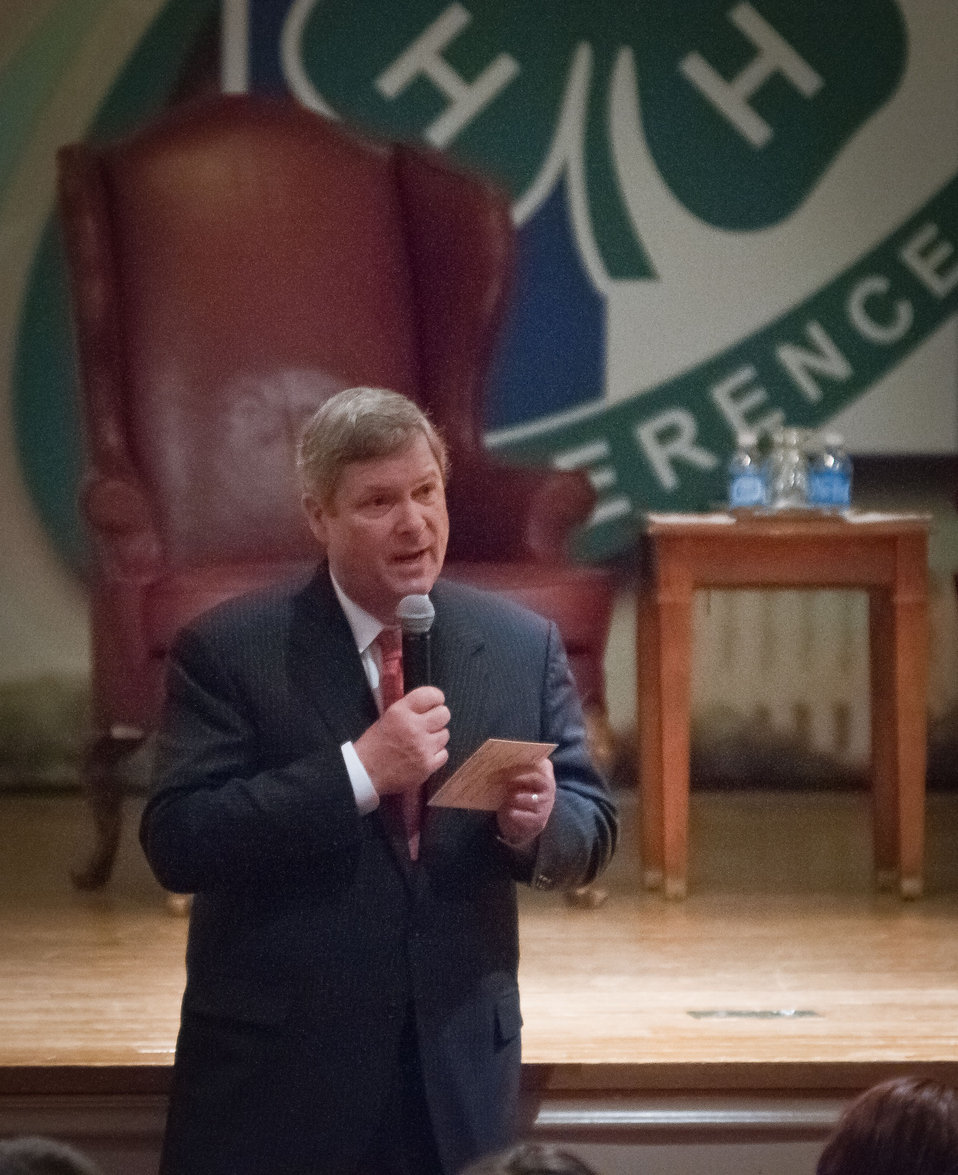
Agriculture Secretary Tom Vilsack speaks with 4-H members at the National 4-H Youth Center in Chevy Chase, MD, on Monday, March 26, 2012. Questions to Secretary Vilsack, included topics such as energy, food security, People's Gardens, regulation, and labor, to name a few. 'For almost 100 years, USDA and 4-H have partnered to produce some of our nation's best and brightest, including farmers and ranchers who have supported the American economy and put food on our tables,' Vilsack said. 'You all are tomorrow's leaders. We need you to think big, innovate and help tackle the important challenges standing between us, a stronger middle class and a stronger nation.'